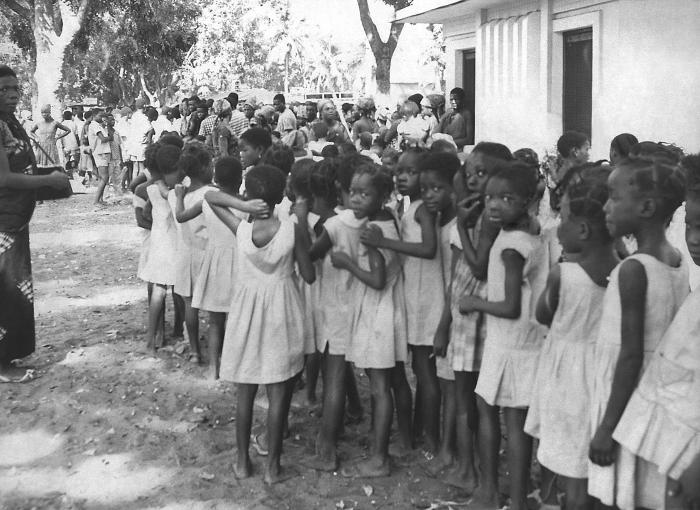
This 1968 photograph depicting a group of local children waiting to receive a smallpox inoculation, was taken in the city of Contonou, Benin, which was formerly the country of Dahomey, during the worldwide Global Smallpox Eradication Campaign of the late 1960's, early 1970s.